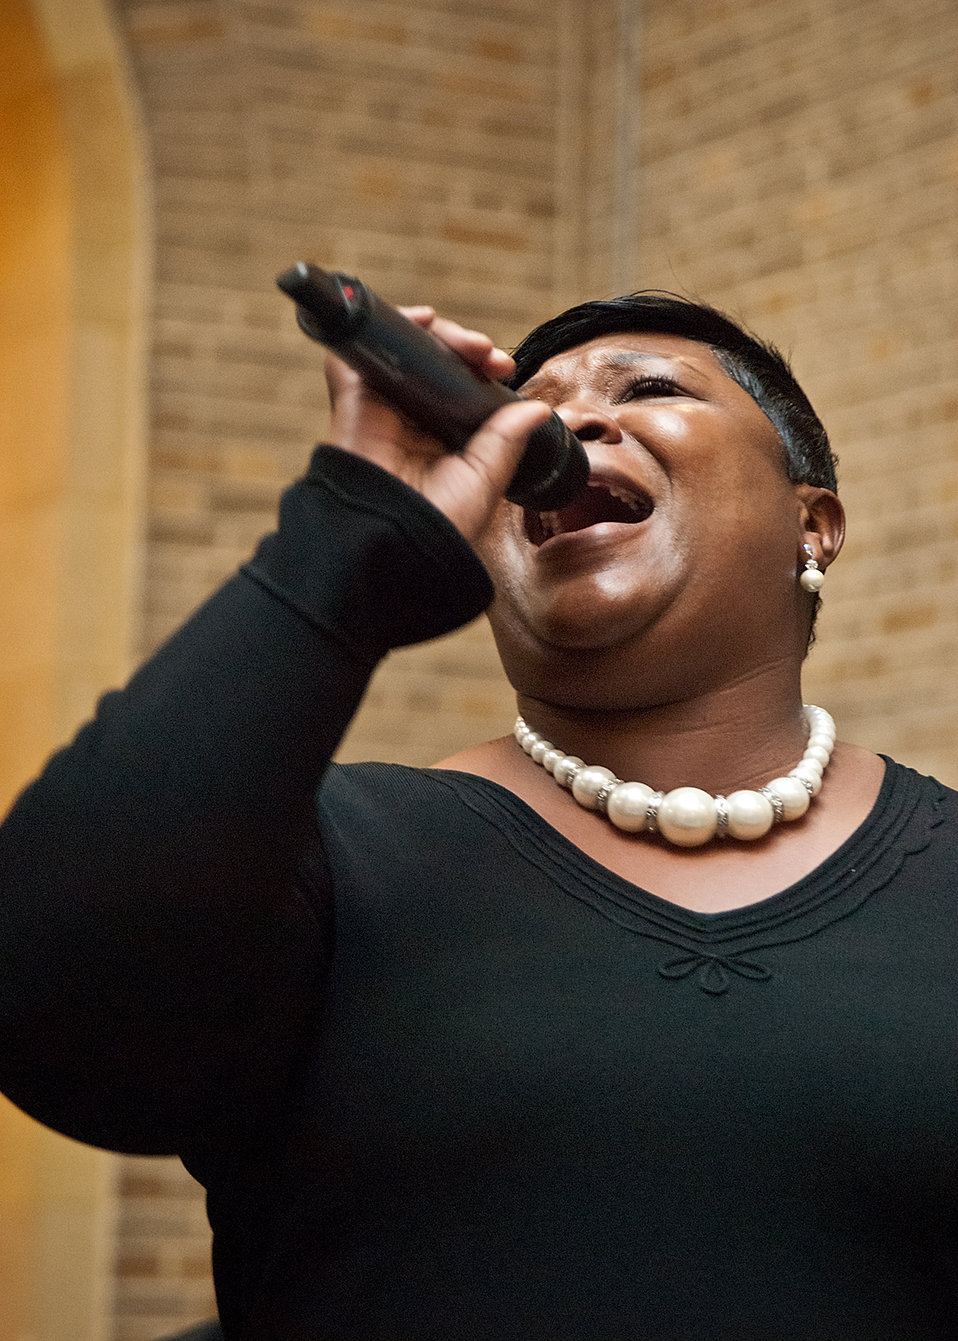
Reedema Rock, Agricultural Marketing Service sings a solo with the Blacks in Government (BIG) Choir during the Cultural Transformation Recognition Ceremony on the patio of the Jamie Whitten Building, US Department of Agriculture in Washington, DC, on Tuesday, October 4, 2011. Cultural Transformation is the process of creating a workplace where all employees and customers are treated with dignity, respect and the opportunity for success. Recognizing the important contributions of all employees to the operation of the United States Department of Agriculture. The goal of cultural transformation is to get everyone at USDA – from the Under Secretaries to employees at every grade level, in every location - to ensure USDA is a place where there’s opportunity for all to reach their full potential. Only then can USDA provide its customers with exceptional service in an equitable manner.